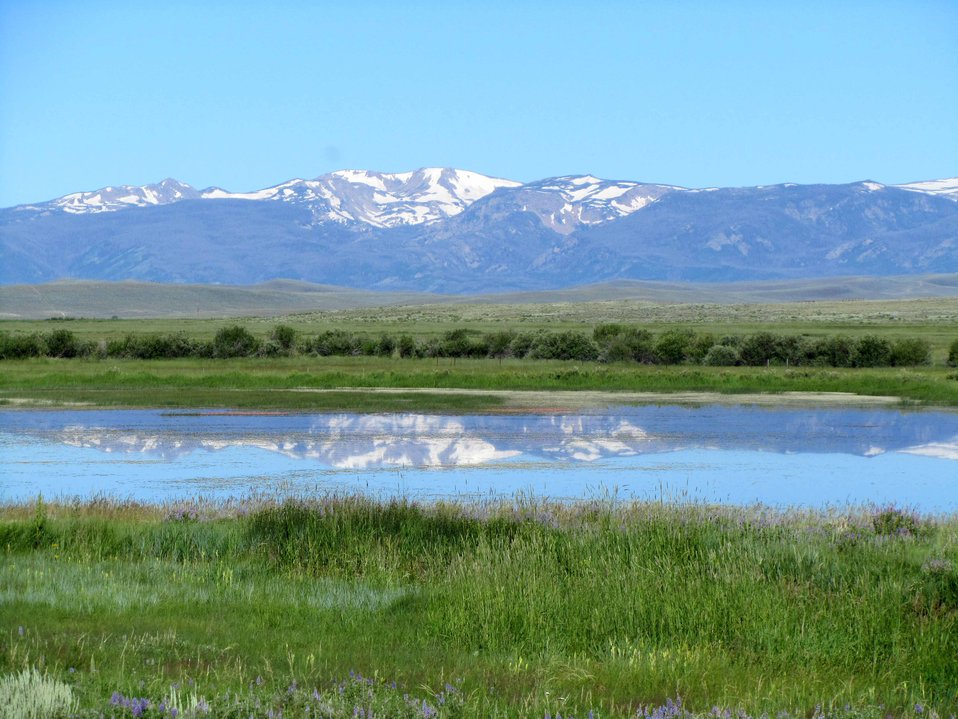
View of Arapaho National Wildlife Refuge

During the summer months, Arapaho National Wildlife Refuge enjoys just enough sun and rain to green the bottomlands and upland slopes. The refuge is located in an intermountain glacial basin south of Walden, county seat of Jackson County, Colorado. Photo taken July 25. For more information about Arapaho NWR, please visit: www.fws.gov/arapaho/index.html

Photo Credit: Meg Van Ness / USFWS

Photo Contest Entry #193